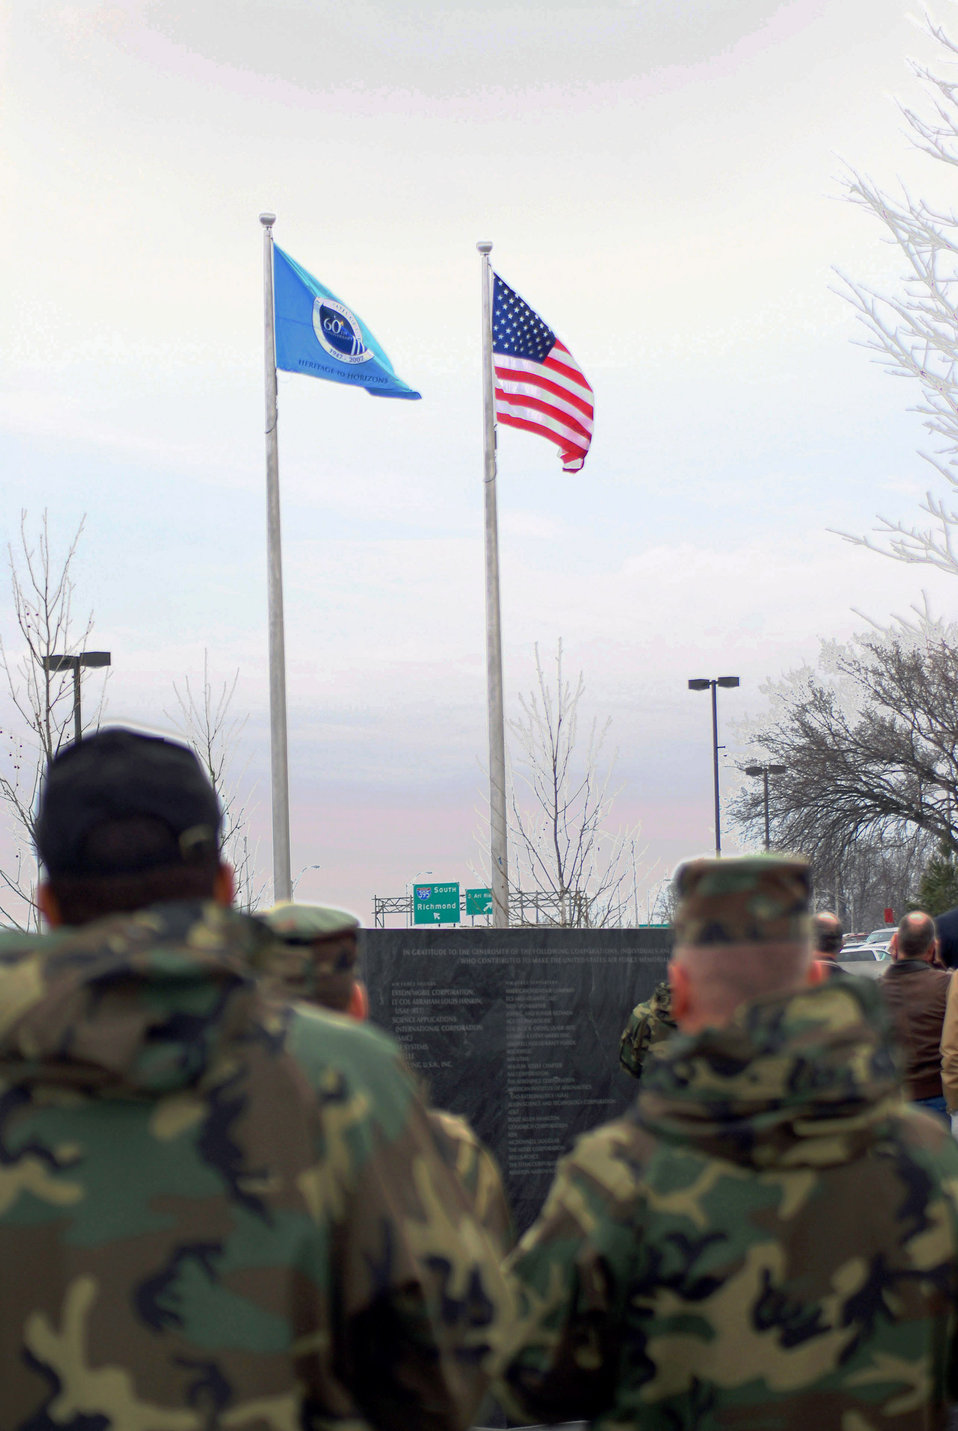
Air Force 60th Anniversary flag raised at memorial

The newly unveiled Air Force 60th Anniversary flag is drawn up the flagpole for the first time March 1 at the Air Force Memorial in Arlington, Va. The ceremony was attended by Chief of Staff of the Air Force Gen. T. Michael Moseley and Secretary of the Air Force Michael W. Wynn.